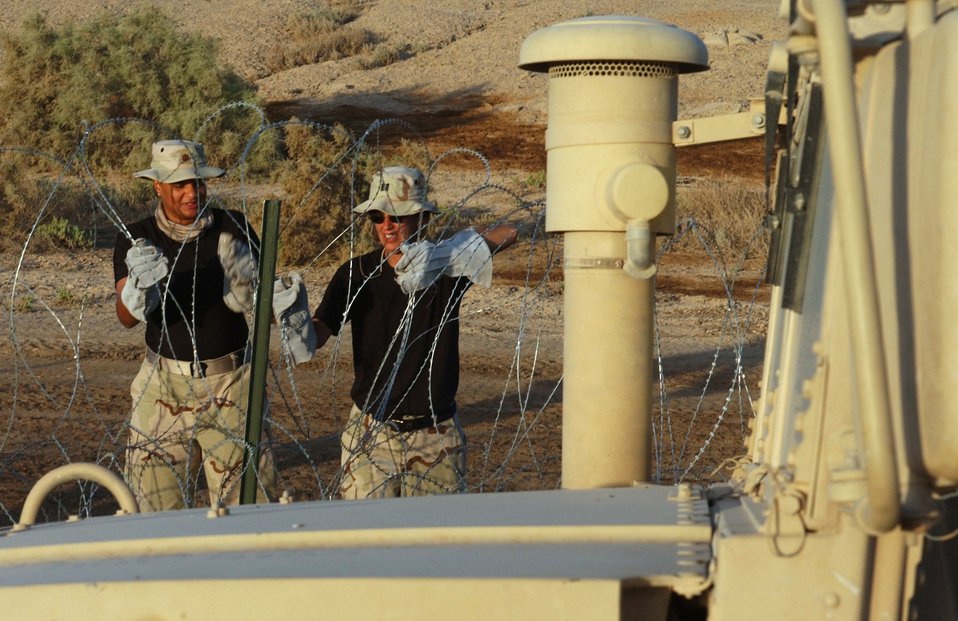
Wired in Baghdad

BAGHDAD, Iraq -- Maj. Phyllis Robertson (left) and Capt. Gabrielle Childs run Constantine wire and barbed wire along the flightline perimeter here. Volunteers will run more than 36,000 feet wire to help protect people and aircraft at Baghdad International Airport. The Airmen are assigned to the 447th Expeditionary Medical Squadron. Major Robertson is deployed from Travis Air Force Base, Calif., and Captain Childs is deployed from Luke AFB, Ariz.